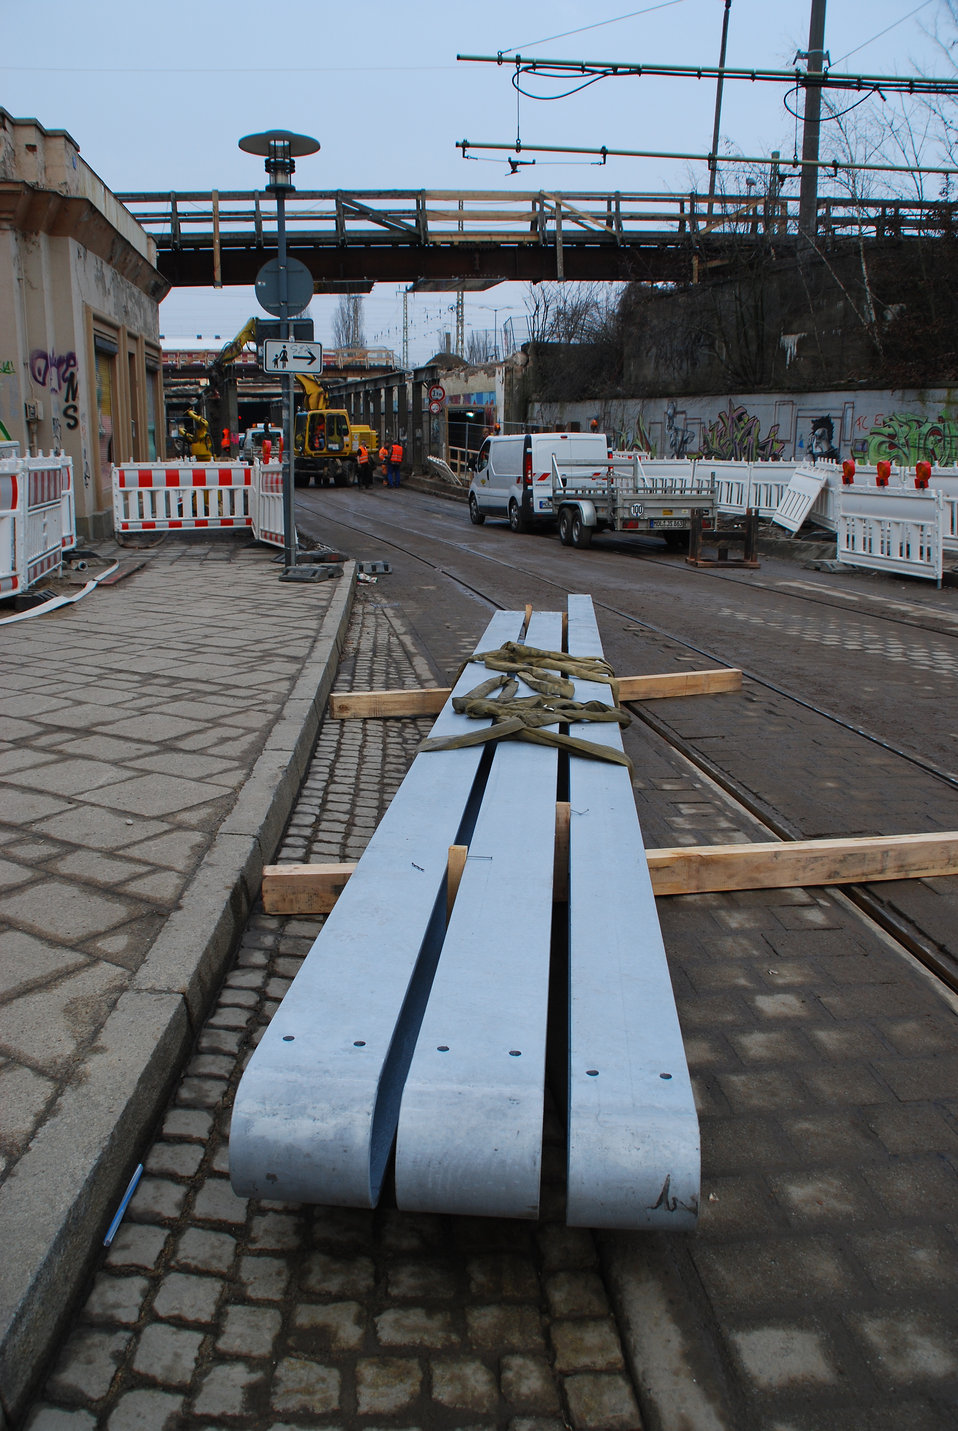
Abriss Bahnhofstunnel Frankfurt (Oder)